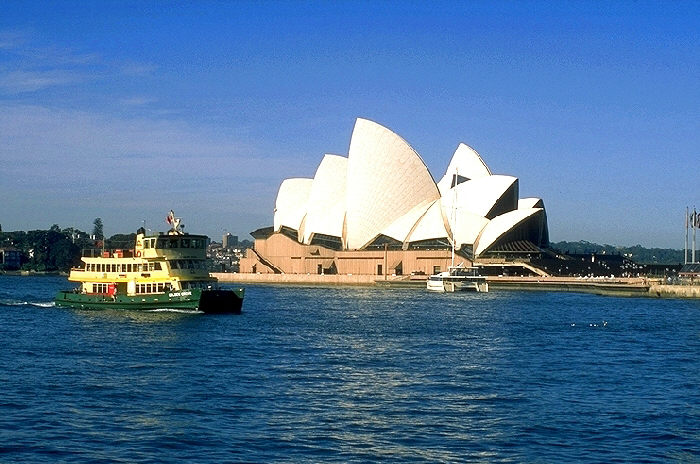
Opera House and ferry boat, Sydney, Australia.